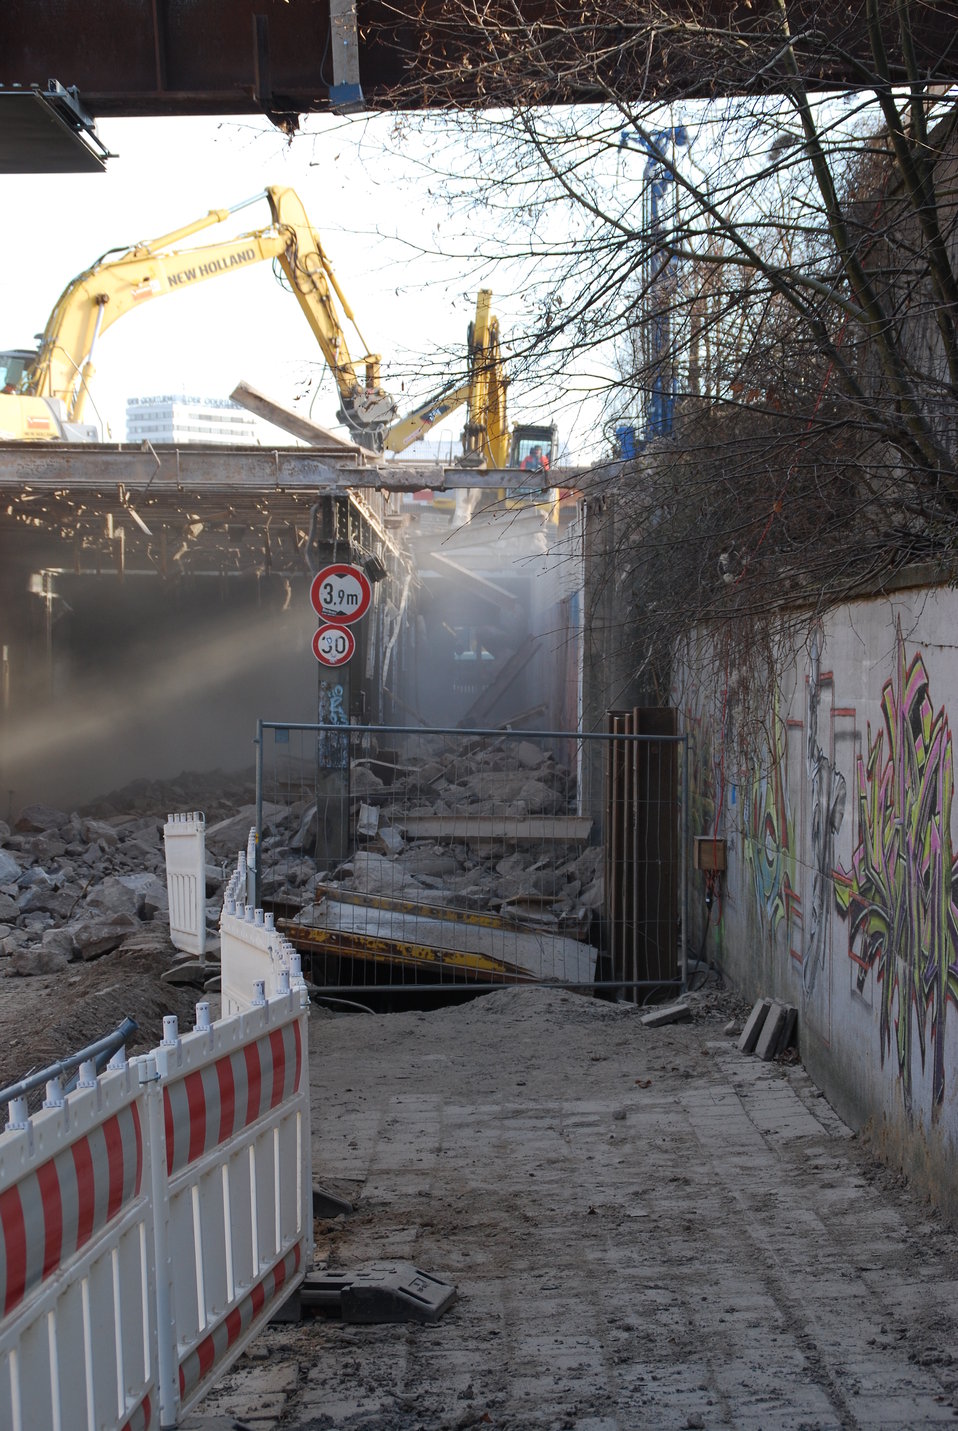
Abriss Bahnhofstunnel Frankfurt (Oder)